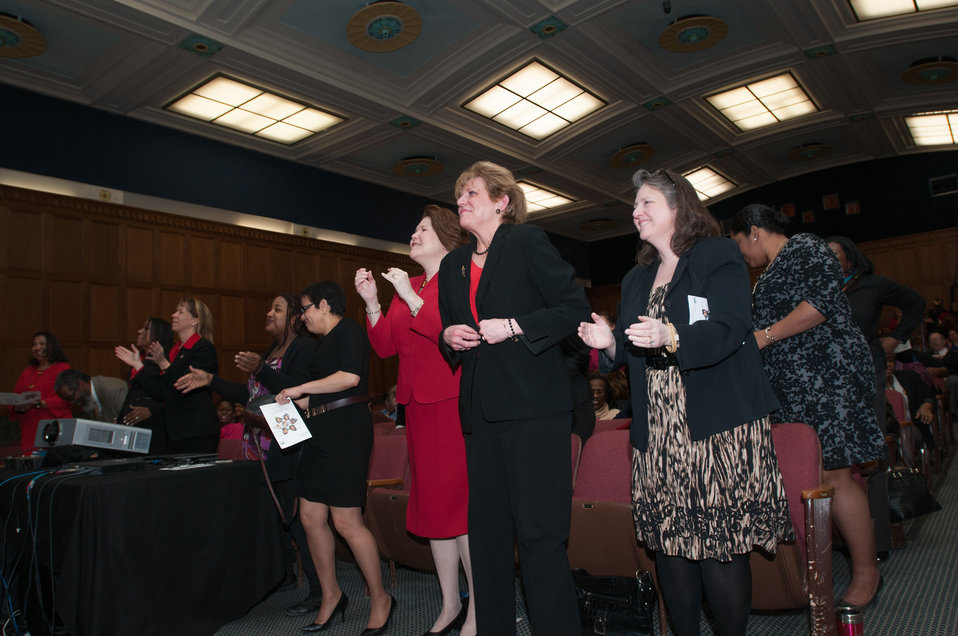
U.S. Department of Agriculture (USDA) celebrates the 2013 Women’s History Month Observance in the Jefferson Auditorium with an event themed “Women Inspiring Innovation Through Imagination: Celebrating omen in Science, Technology, Engineering, and Mathematics, on Thursday march 21, 2013. The keynote speaker was American Association of University Women Executive Director and CEO Linda Hallman. Also providing remarks were Agriculture Deputy Secretary Dr. Kathleen Merrigan; Rural Development Acting Deputy Under Secretary Judith Canales; Deputy Assistant Secretary for Administration Deputy Assistant Secretary Robin Heard; and Agriculture Research Service Associate Administrator for National Programs Dr. Chavonda Jacobs-Young.